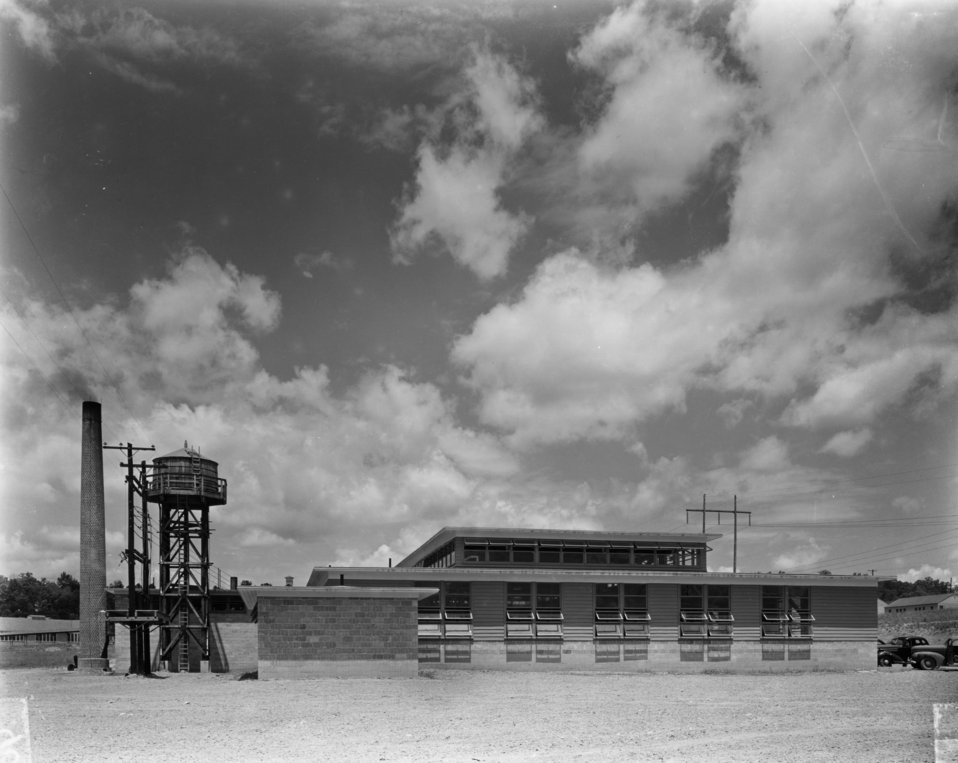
Business activity at Oak Ridge